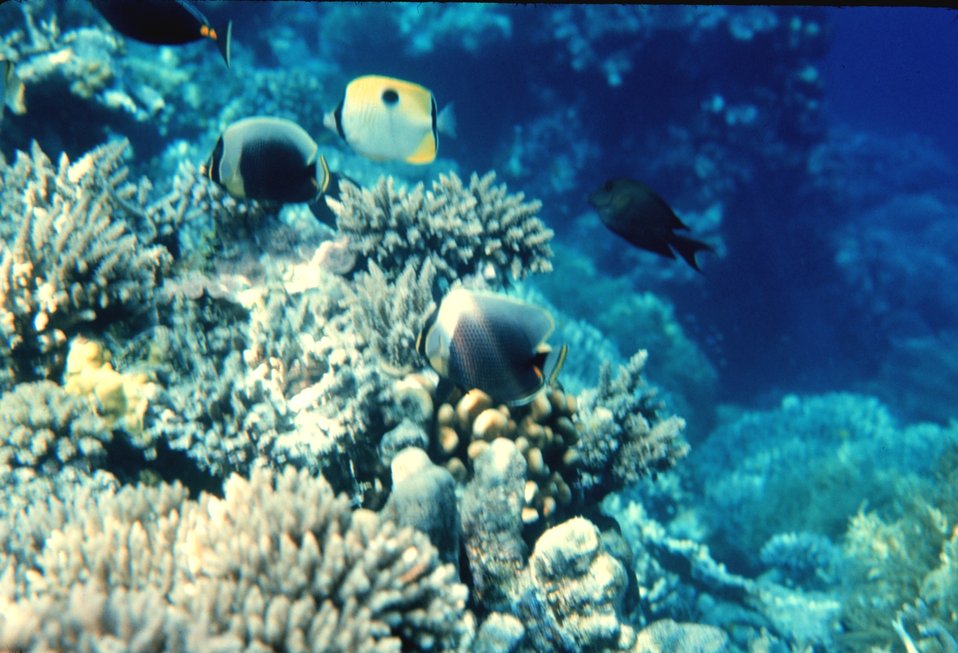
Yellow butterfly is Chaetodon Unimaculatus. Greyish butterfly is reticulated butterflyfish (Chaetodon reticulatus).